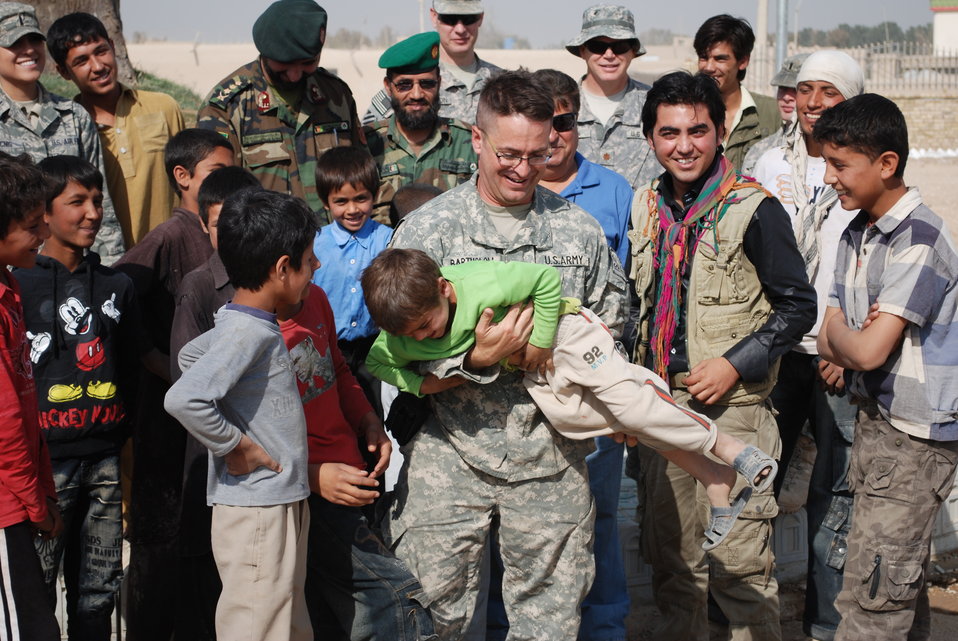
'On the Road' in Balkh Province